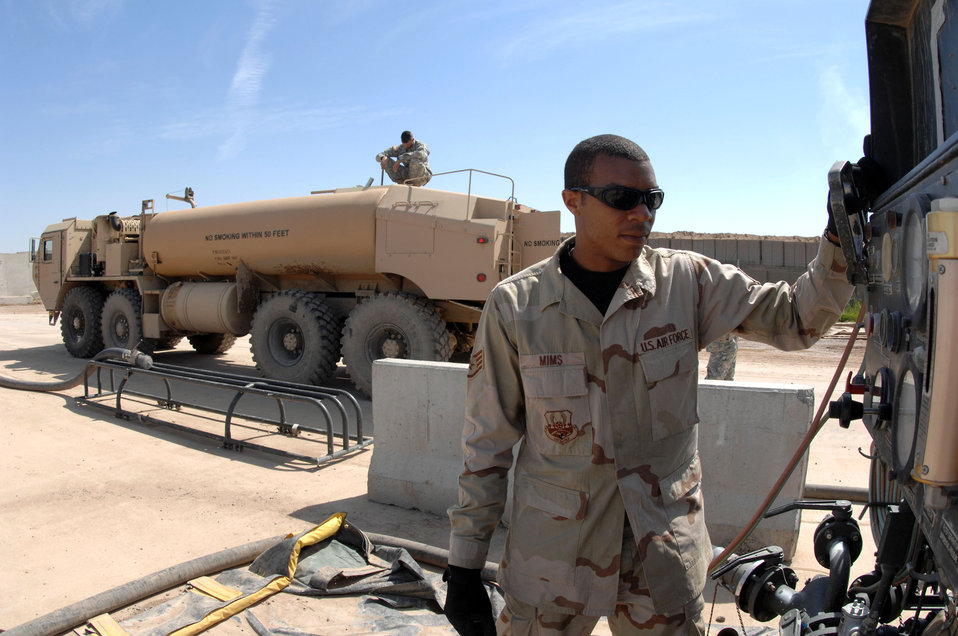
Keepin' the fuel flowin' in Kirkuk

Staff Sgt. Edward Mims watches the gauges on an R-14 refueler system as he fuels an Army truck April 5 while Army Spc. John Goughenour monitors the amount being pumped at Kirkuk Air Base in Iraq. Sergeant Mims is a fuels supervisor with the 506th Expeditionary Logistics Readiness Squadron and Specialist Goughenour is a member of Alpha Company, 325th Brigade Support Battalion at Schofield Barracks, Hawaii.